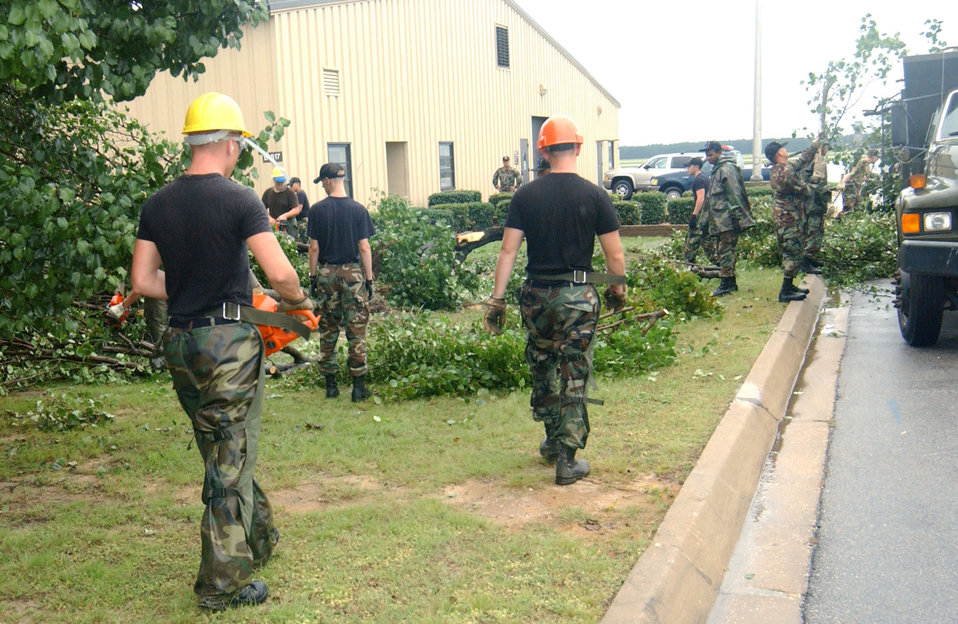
Tornado blows through Shaw

SHAW AIR FORCE BASE, S.C. -- Airmen from the 20th Civil Engineer Squadron clean up following a tornado with winds at about 103 mph that touched down here Sept. 7. The tornado damaged homes, power lines, trees and vehicles here. Multiple tornados stemming from Hurricane Frances touched down throughout the state. No one on base was injured.